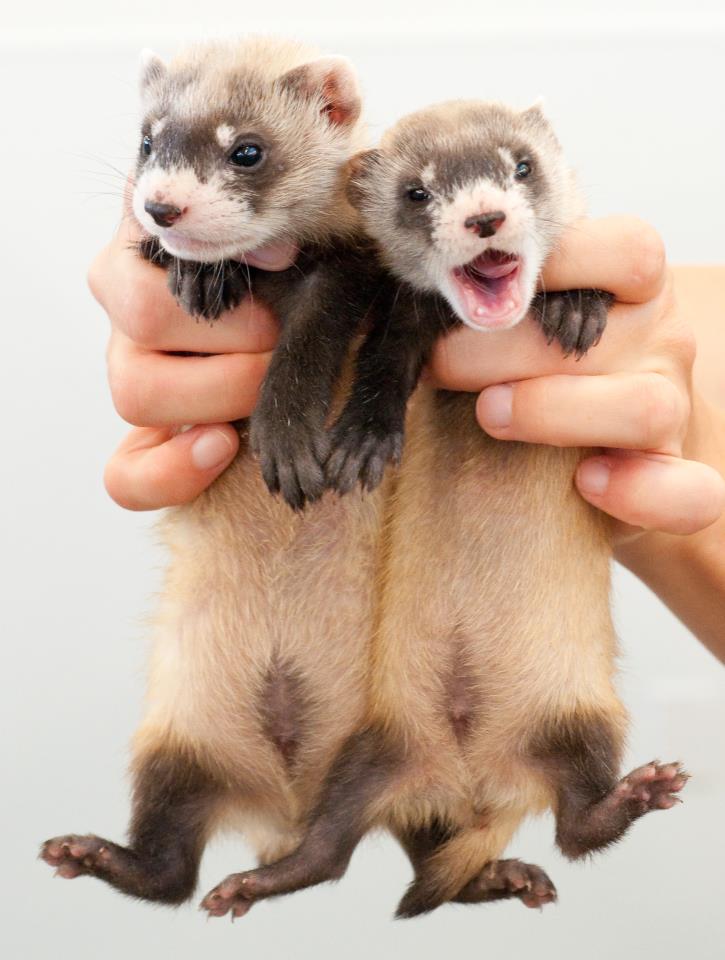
Just Hangin' Out

Credit: Kimberly Tamkun / USFWS

Photo Contest Entry #19